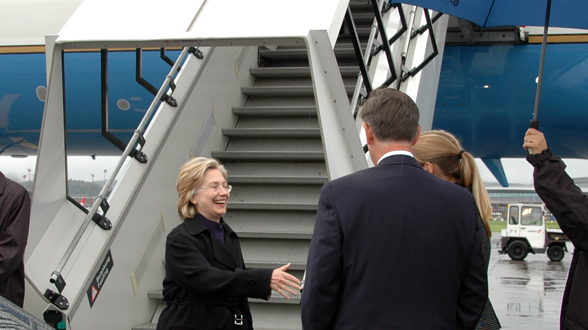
Secretary Clinton Arrives in Zurich

U.S. Secretary of State Hillary Rodham Clinton is greeted by U.S. Ambassador to Switzerland Donald S. Beyer and Ms. Alexandra Baumann (Federal Department of Foreign Affairs) during her arrival in Zurich, Switzerland October 9, 2009.